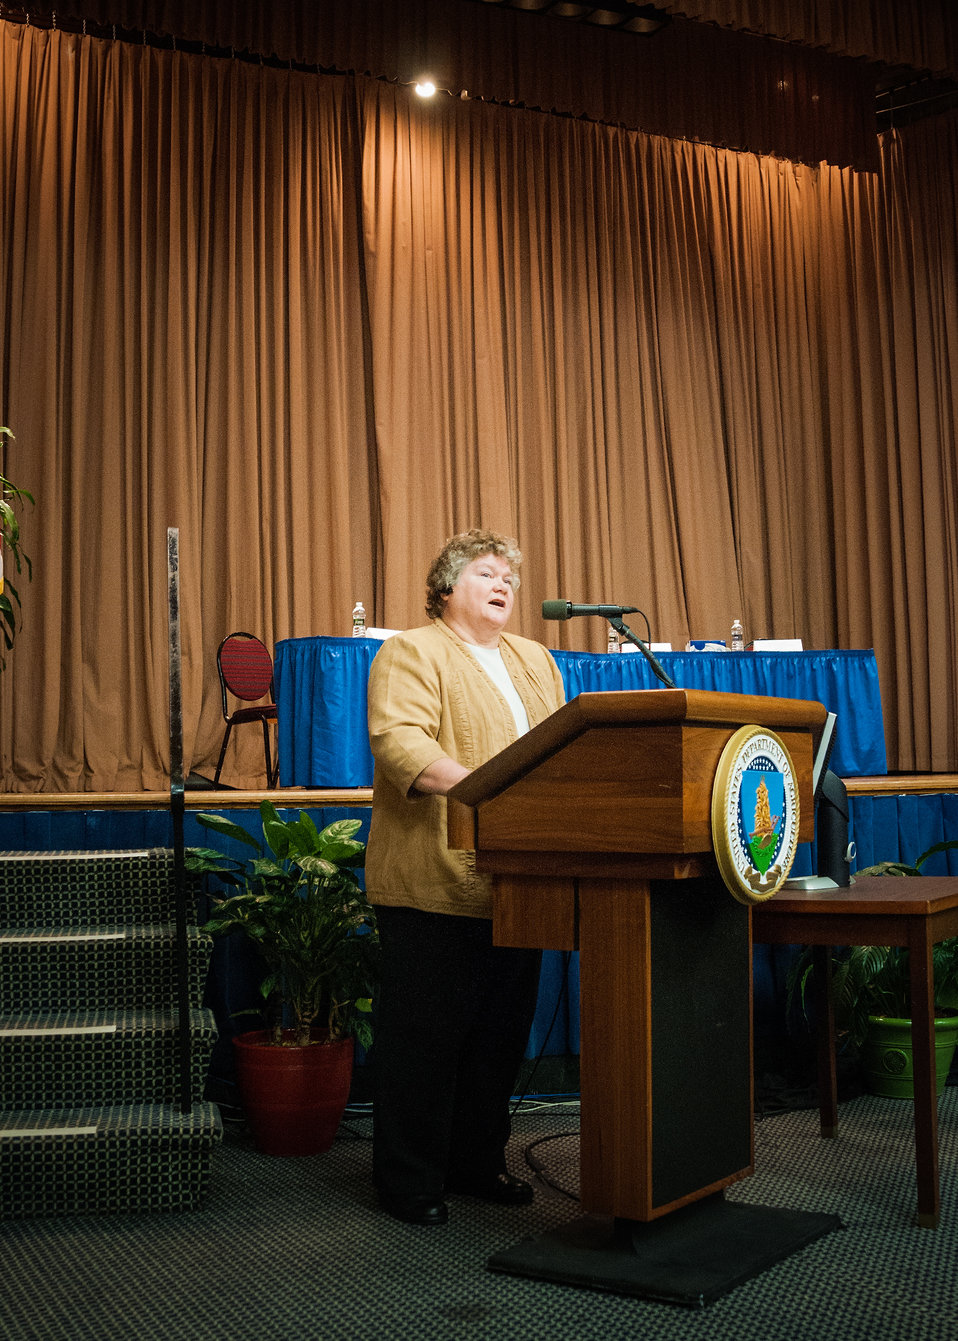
U.S. Department of Agriculture (USDA) Office of the Chief Information Officer (OCIO) Sue Bussells gives the closing remarks at the USDA OCIO celebration of National Women’s History Month at the USDA Jefferson Auditorium in Washington, D.C. on Thursday, Mar. 14, 2013. The OCIO is celebrating Women’s National History Month to commemorate women’s struggles, celebrate centuries of progress, and reaffirm women’s steadfast commitment to the rights, security and dignity of women in America and around the world. The theme of this year’s celebration was, “Recognizing American Women’s Outstanding Contributions to the Field of Science, Technology, Engineering and Mathematics,” commonly referred to as STEM.